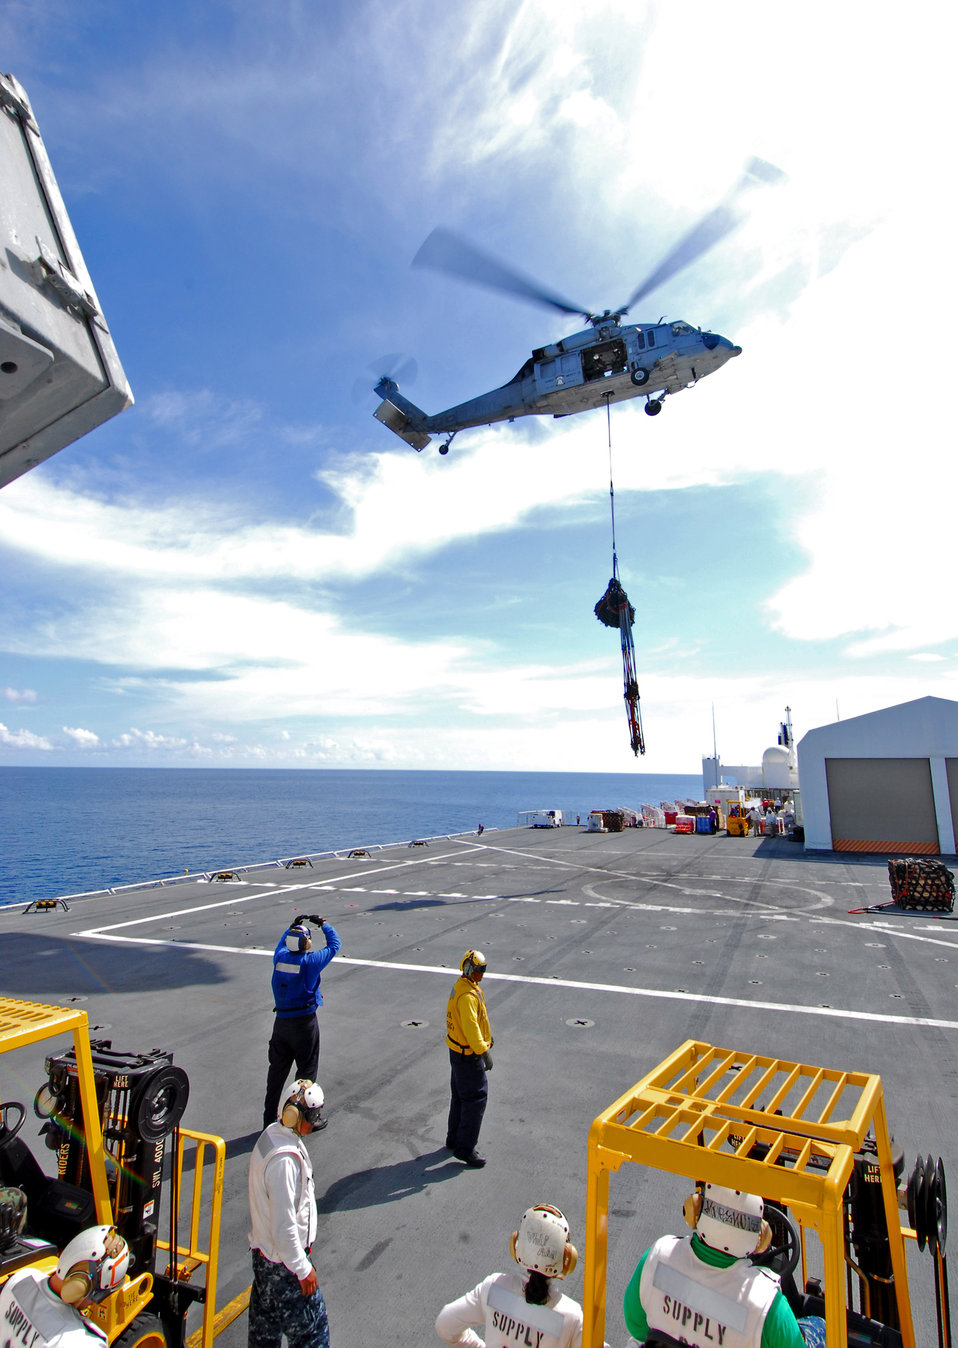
An MH-60S Knighthawk Helicopter Conducts a Vertical Replenishment (VERTREP)

An MH-60S Knighthawk helicopter from Helicopter Sea Combat Squadron 23 “Wild Cards”, attached to the Military Sealift Command hospital ship USNS Mercy (T-AH 19), conducts a vertical replenishment (VERTREP) in the Banda Sea on July 25, 2010. Mercy is conducting Pacific Partnership 2010, the fifth in a series of annual U.S. Pacific Fleet humanitarian and civic assistance endeavors to strengthen regional partnerships.